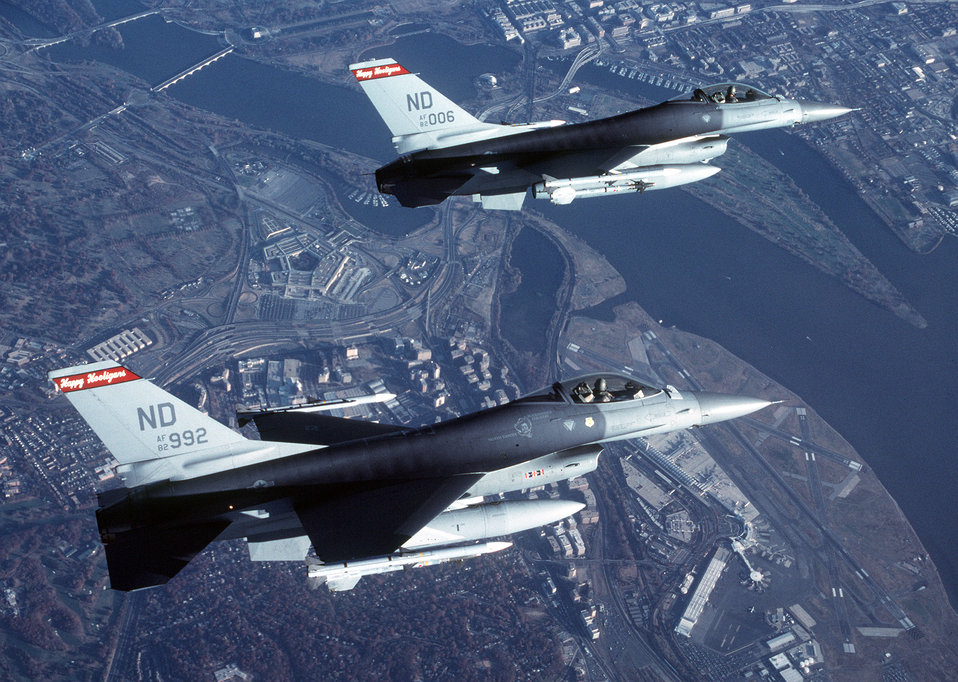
Operation Noble Eagle

NORAD fighters like these were in the air within minutes following the report that a small aircraft crashed into a New York apartment building.